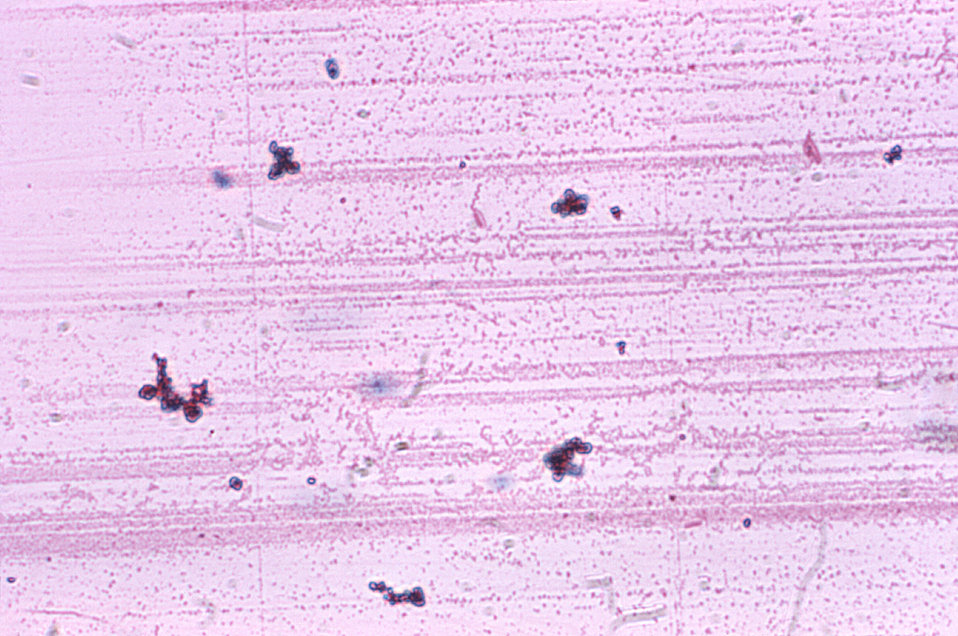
Magnified 1000X, this Liefson's flagella stained photomicrograph revealed the presence of a number of flagellated Brevundimonas diminuta, formerly known as Pseudomonas diminuta.